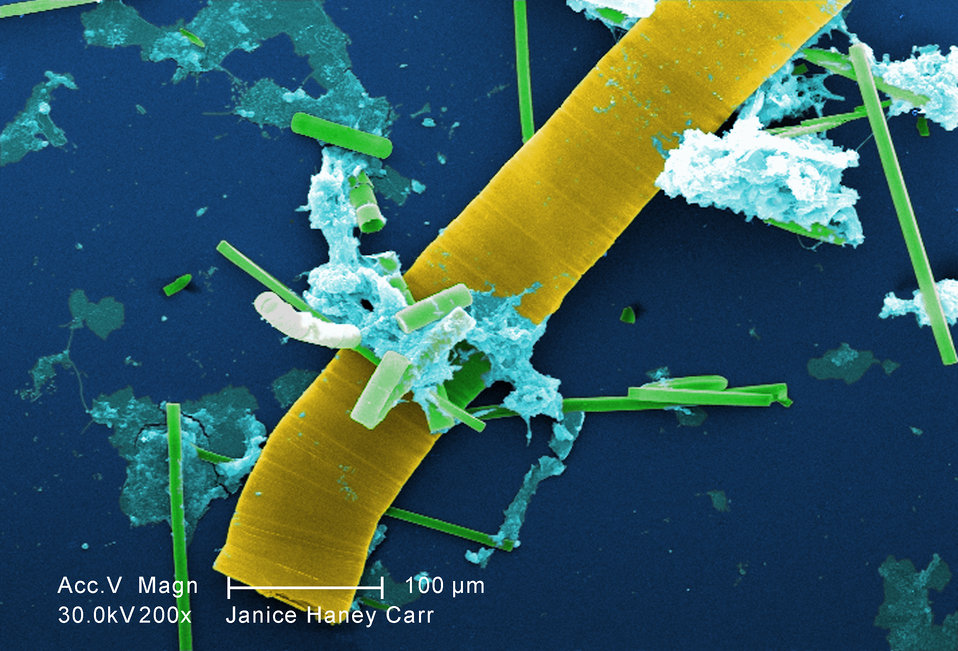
Under a relatively low magnification of 200X, this digitally-colorized scanning electron micrograph (SEM) of an untreated water specimen extracted from a wild stream mainly used to control flooding during inclement weather, revealed the presence of unidentified organisms, which included bacteria, protozoa, and algae. In this particular view, numbers of what appeared to be rod-shaped sections of various sizes were scattered throughout the field of view, which though unconfirmed, may have been vegetative in nature, and possibly algal organisms. There were also patches of biofilm present as well.